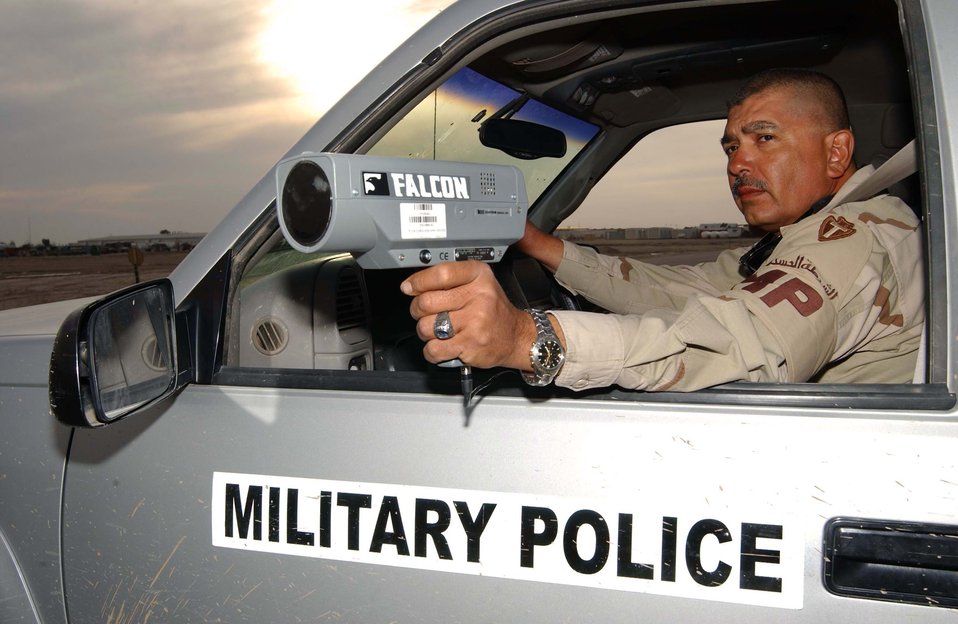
Tallil joint security force upholds law, order

TALLIL AIR BASE, Iraq -- Army Sgt. Jessie DeLarosa uses a radar gun to catch speeding violators here. He is a military policeman with the Texas Army National Guard's 36th Infantry Division and is deployed from San Antonio.